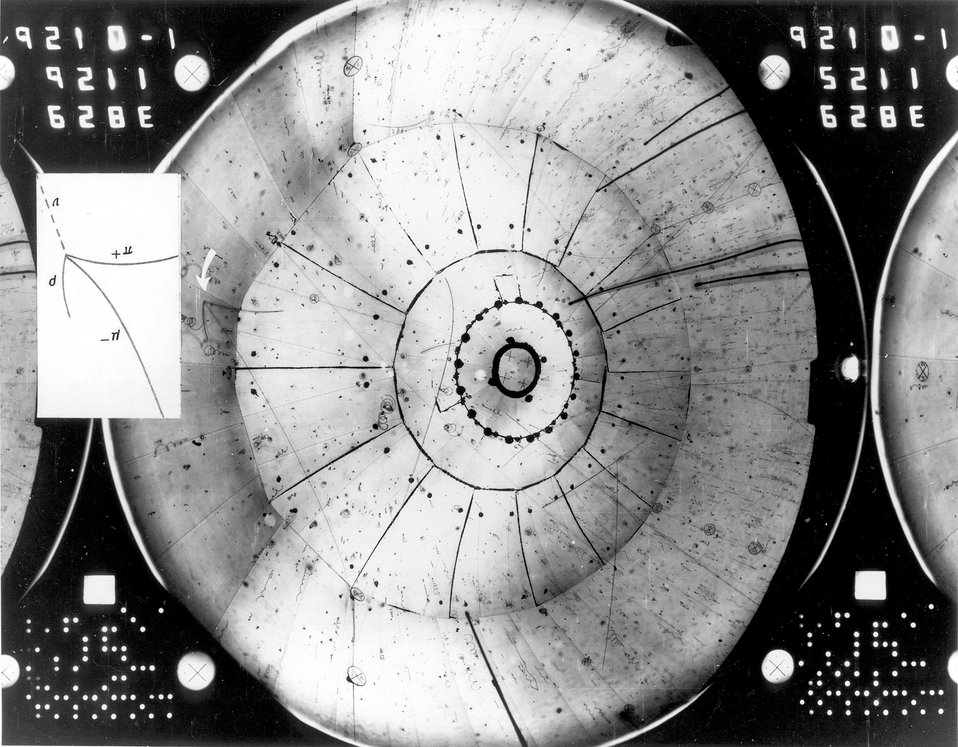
The first neutrino-induced reaction in pure hydrogen produced in the bubble chamber at the AEC's Argonne.